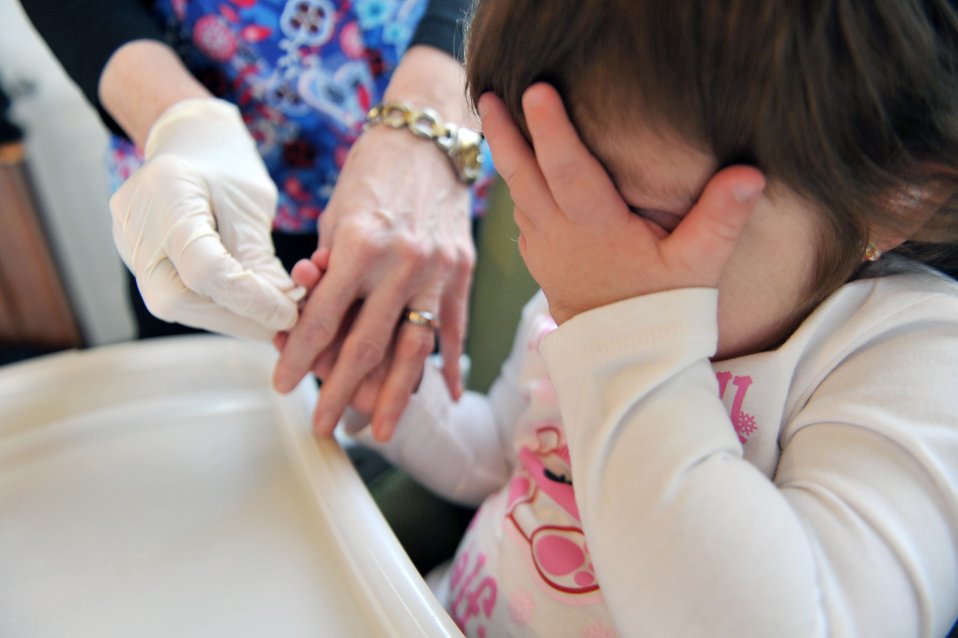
Exceptional Family Member Program

Braelyn Whitford covers her eyes as she prepare to get her finger pricked with a needle at her home in Spokane, Wash., on Apr. 5, 2011. Braelyn is diagnosed with Kabuki Syndrome. Braelyn and her family are assisted through the Exceptional Family Member Program which connects active duty family members who have special needs with many helping agencies both on- and off- base.